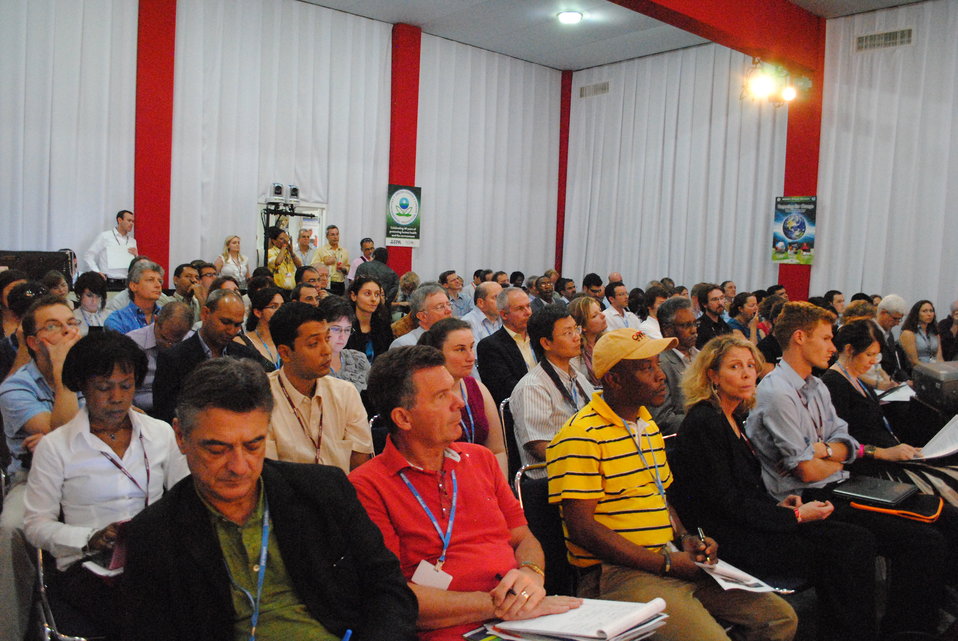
Audience Members Listen to Deputy Special Envoy Pershing

Members of the audience listen to U.S. Deputy Special Envoy for Climate Change Jonathan Pershing speak during the side event, Enhancing Capacity for Low Emission Development Strategies, at the U.S. Center at COP-16 in Cancun, Mexico, on December 2, 2010.